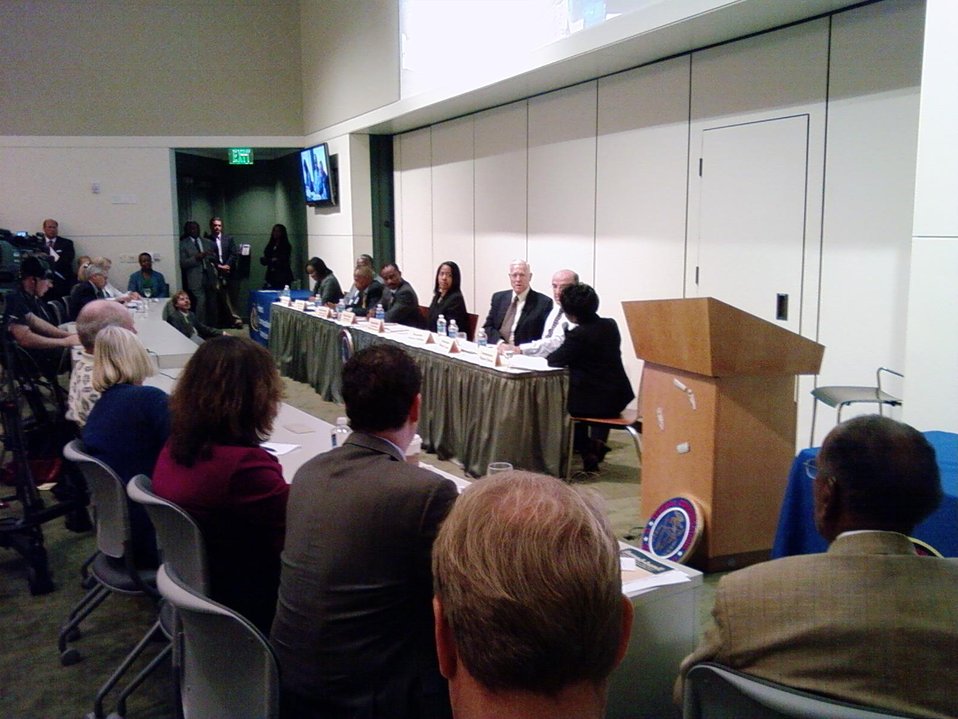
sc event10

Broadband Field Hearing, in Charleston, South Carolina. 10-06-09